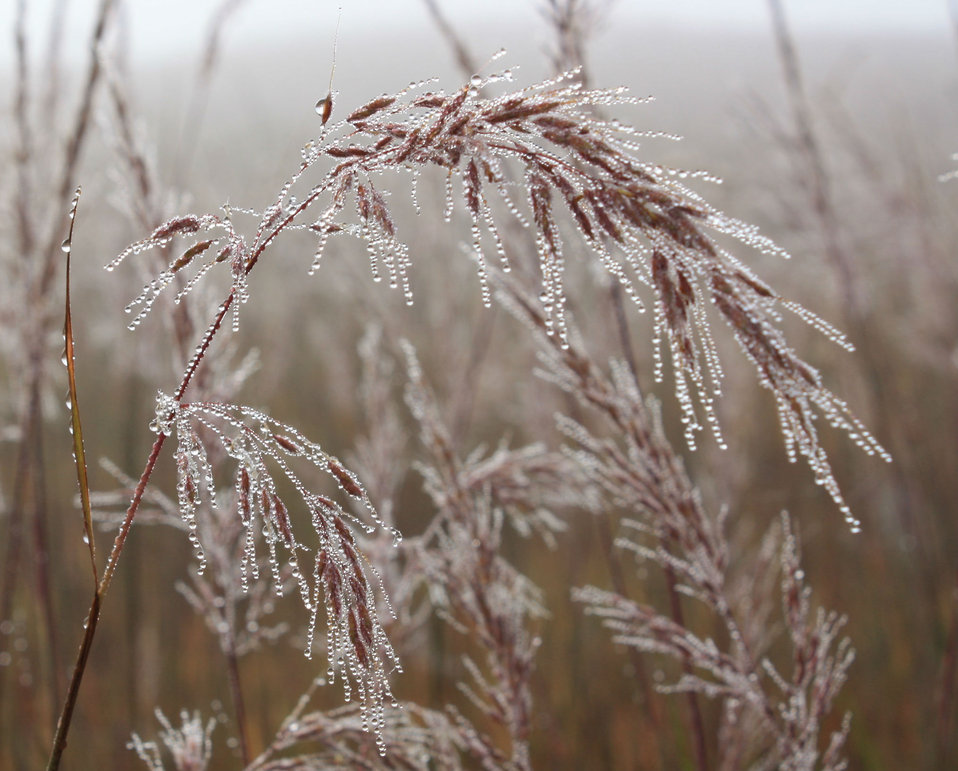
Indian Grass and Dew

Dew transforms a field of Indiangrass into a magical scene. Photo credit:

Laura Hubers/USFWS